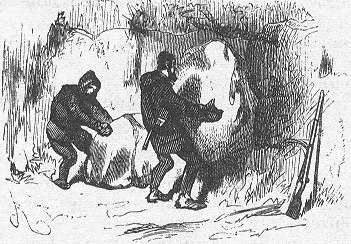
An illustration from Jules Verne's novel 'Journeys and Adventures of Captain Hatteras', part II: 'The Field of Ice' drawn by Édouard Riou and/or Henri de Montaut. Polski: Ilustracja powieści Juliusza Verne'a 'Podróże i przygody kapitana Hatterasa', części II: 'Pustynia lodowa' autorstwa Édouarda Riou i/lub Henri de Montauta. Français : Jules Verne: 'Voyages et aventures du capitaine Hatteras - Le désert de glace', Édouard Riou et Henri de Montaut.